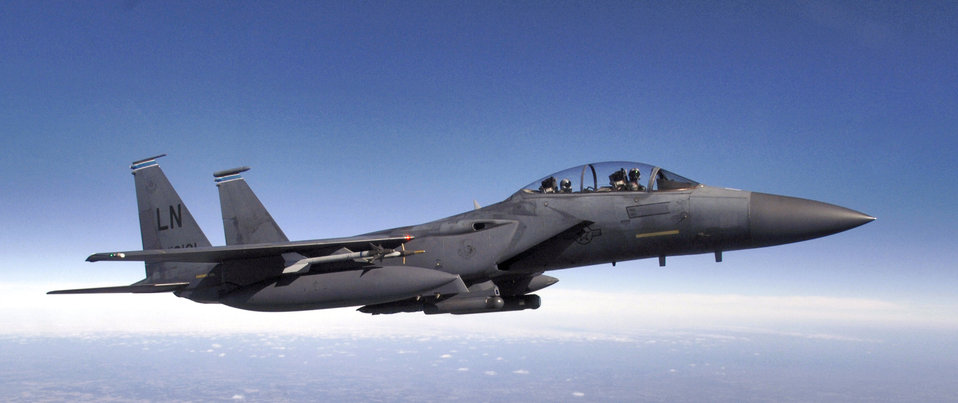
Following a flight of Eagles

Maj. Stephen Damico, the pilot, and Capt. Timothy Morris, the weapon systems officer, the fly their F-15E Strike Eagle during a training flight from Royal Air Force Lakenheath, England, on Thursday, Aug. 3. The jet, assigned to the 492nd Fighter Squadron, was part of three-ship formation that flew to an area off the southwestern coast of England to practice surface attack training techniques.